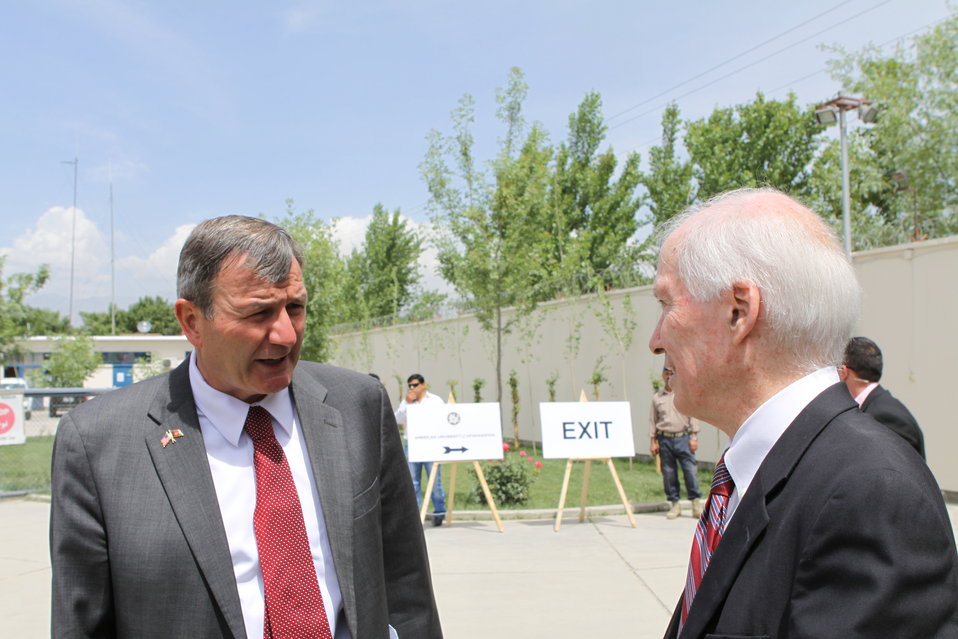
100526 AUAF Graduation 020